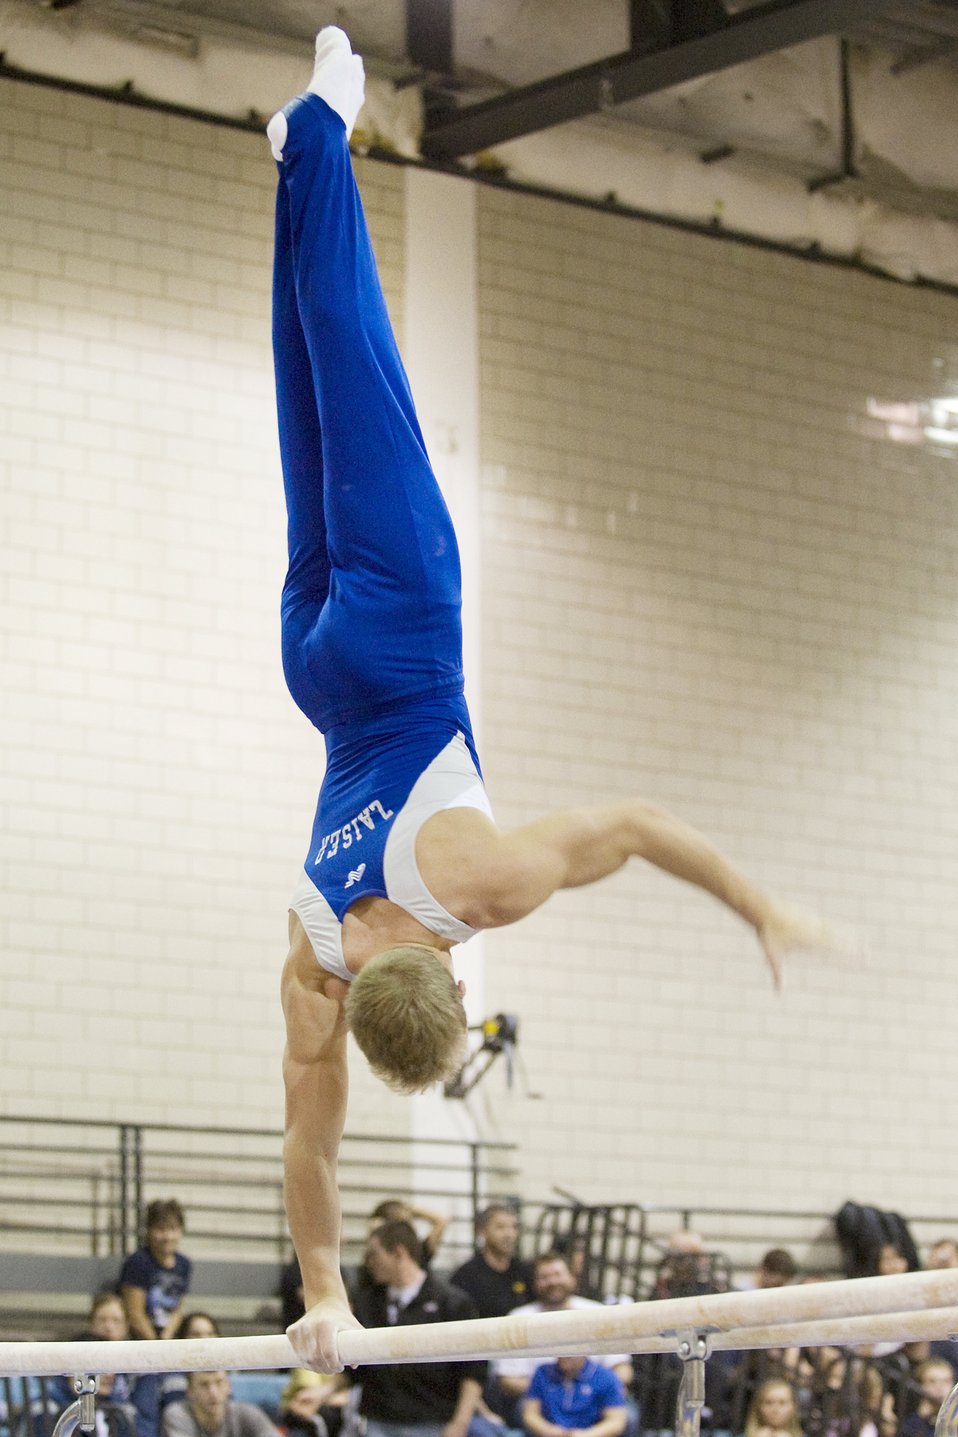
Falcons open season with Rocky Mountain event

Falcon junior Aaron Zaiser performs on the parallel bars during the Rocky Mountain Open meet held in the field house at the U. S. Air Force Academy, Colo., Jan. 16, 2010. This was the first meet of the season hosted by the 14th ranked Falcons. For his routine Zaiser finished in 8th place with a score of 14.050.